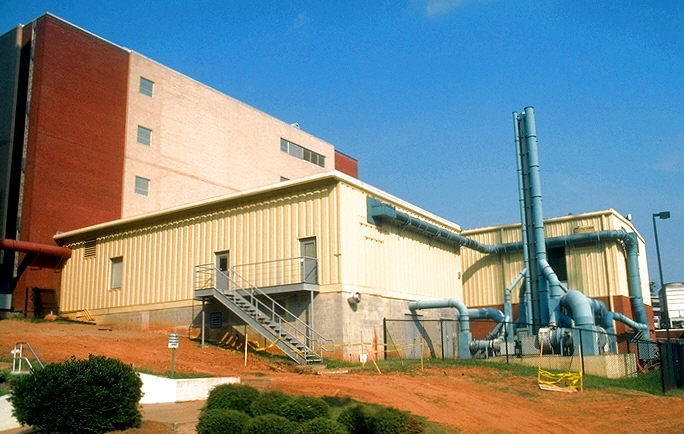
On the Centers for Disease Control's (CDC) Roybal Campus, located in metropolitan Atlanta, Georgia, this 1998 image depicts what were formerly Buildings 8 and 9.